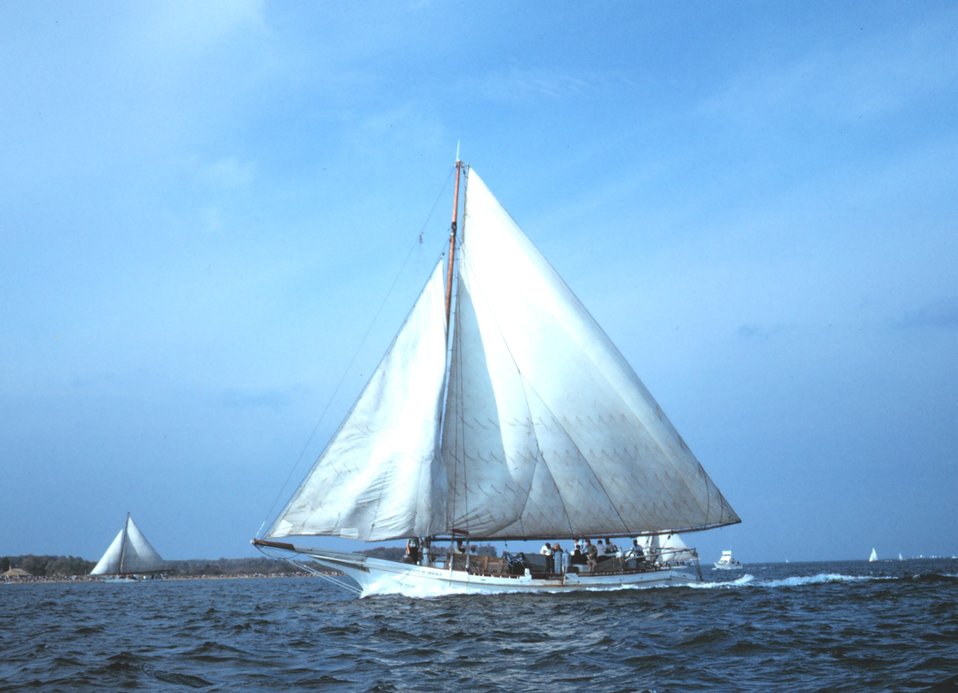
A sailing oyster dredger underway on Chesapeake Bay.